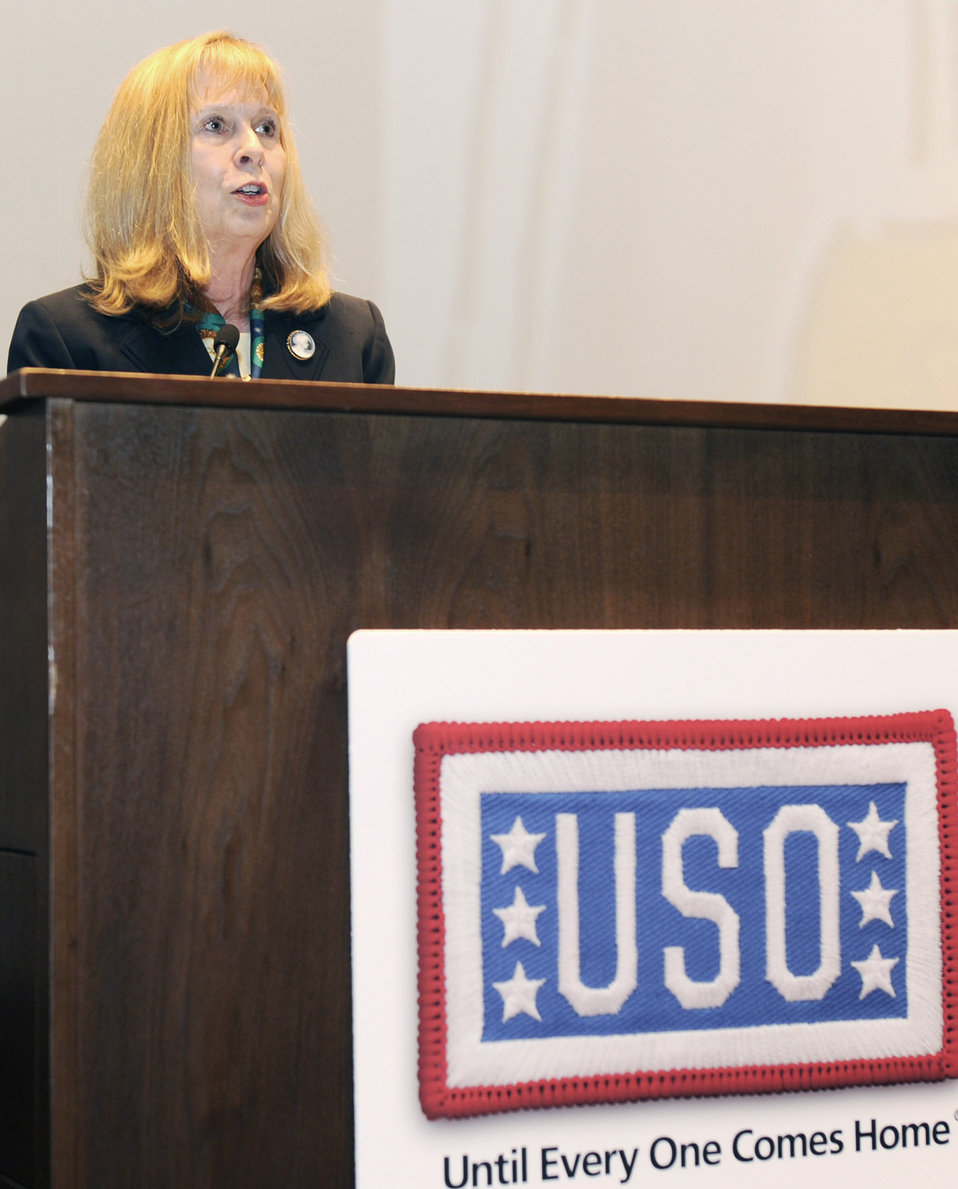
New DVD helps children deal with deployment

Barbara Thompson speaks at a USO-sponsored film screening of the DVD